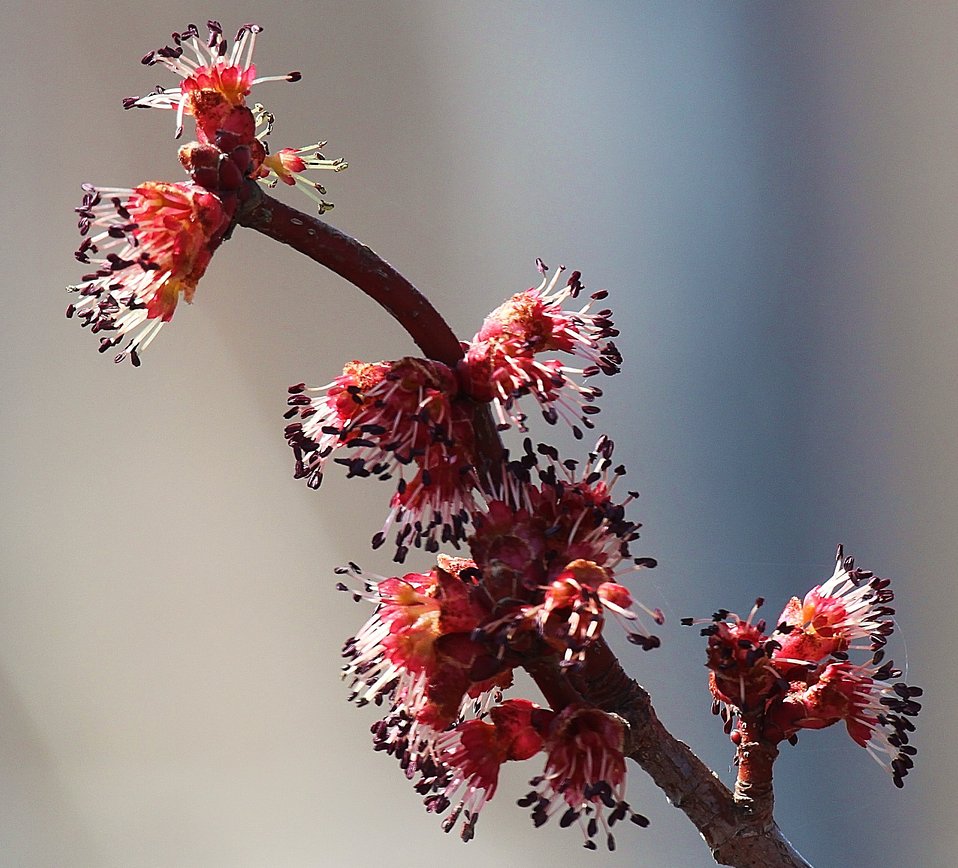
Red Maple

Flowering red maple at Missisquoi National Wildlife Refuge.